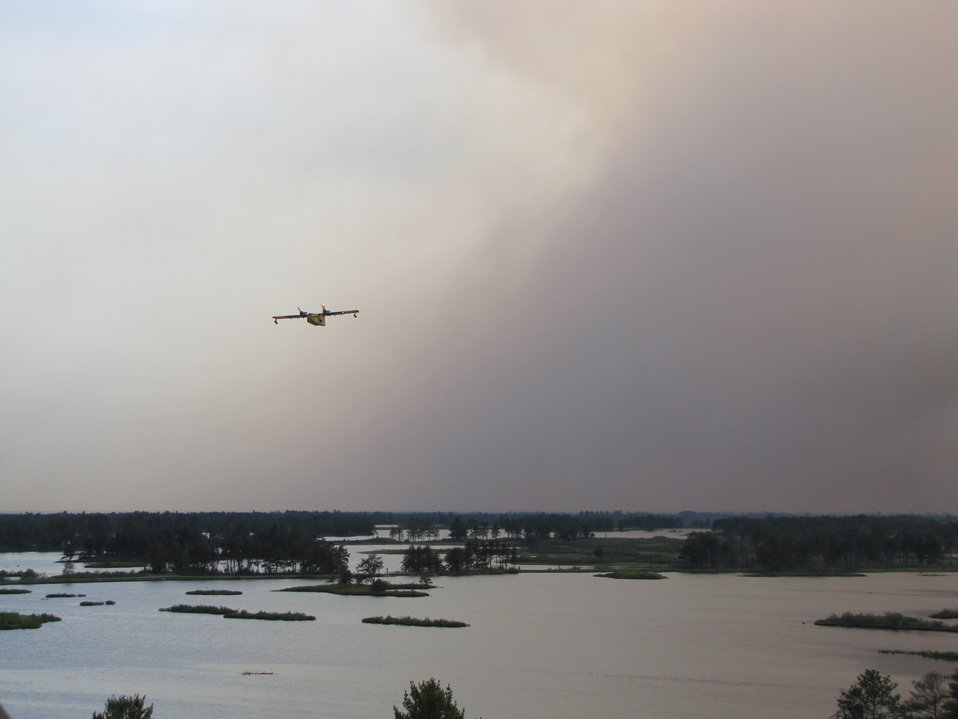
CL-215 Flying Through Smoke

This CL - 215 is flying back to Big Manistique Lake after it dropped its 1400 gallon load of water on the Pine Creek North Wildfire.